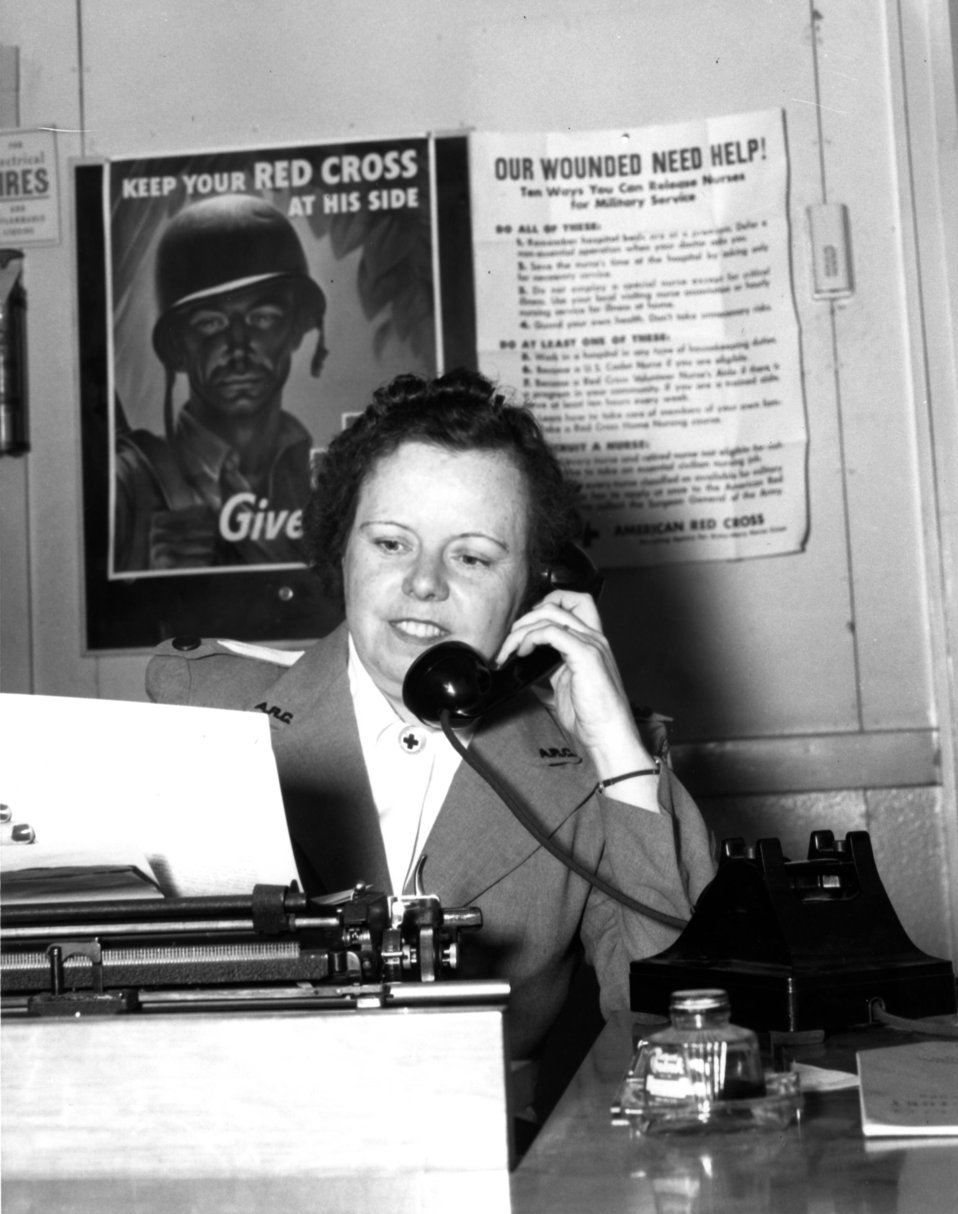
Medical at Oak Ridge